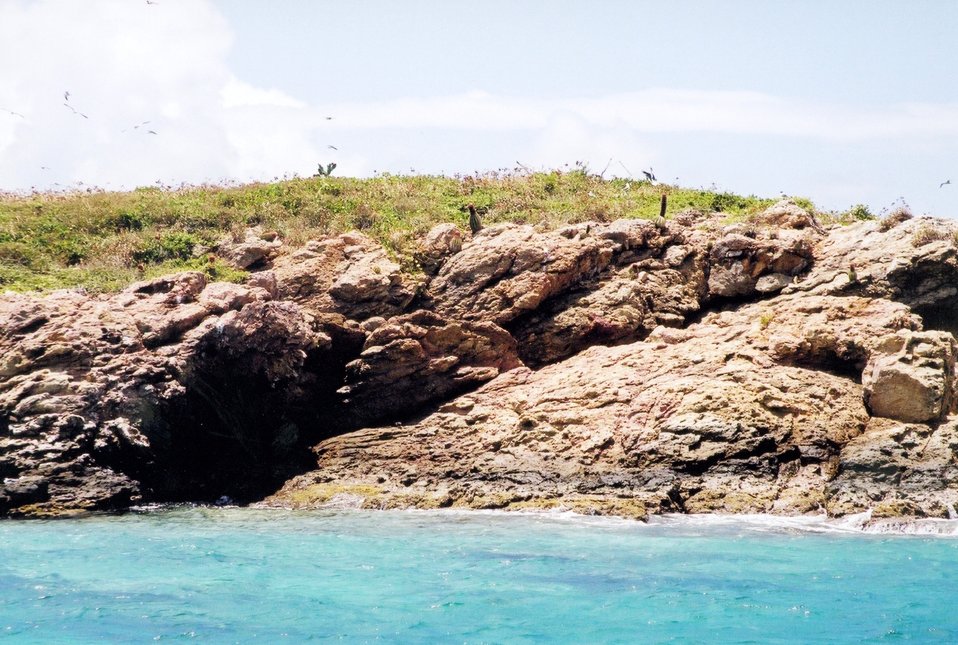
A small island in Pillsbury Sound.